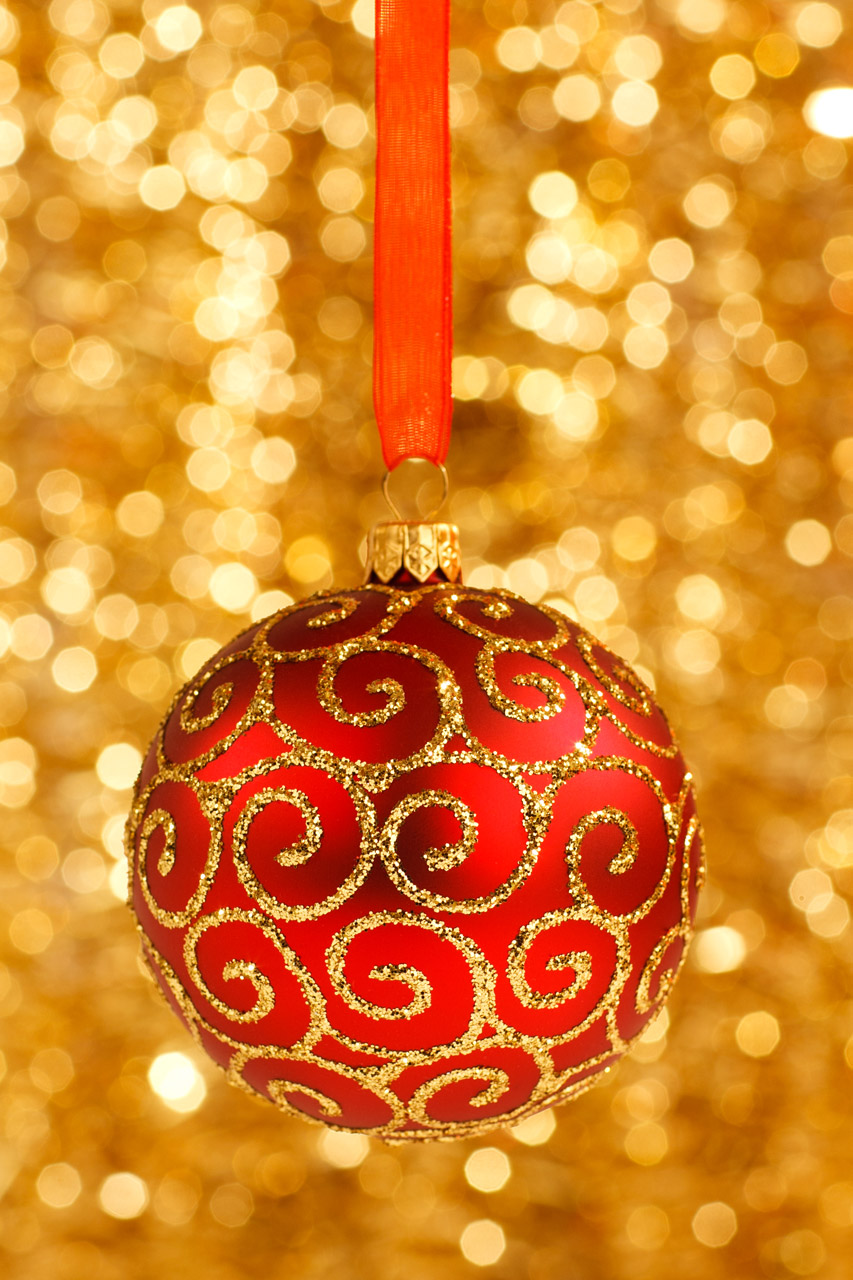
Christmas bauble on gold

Red christmas bauble on blurred golden background.